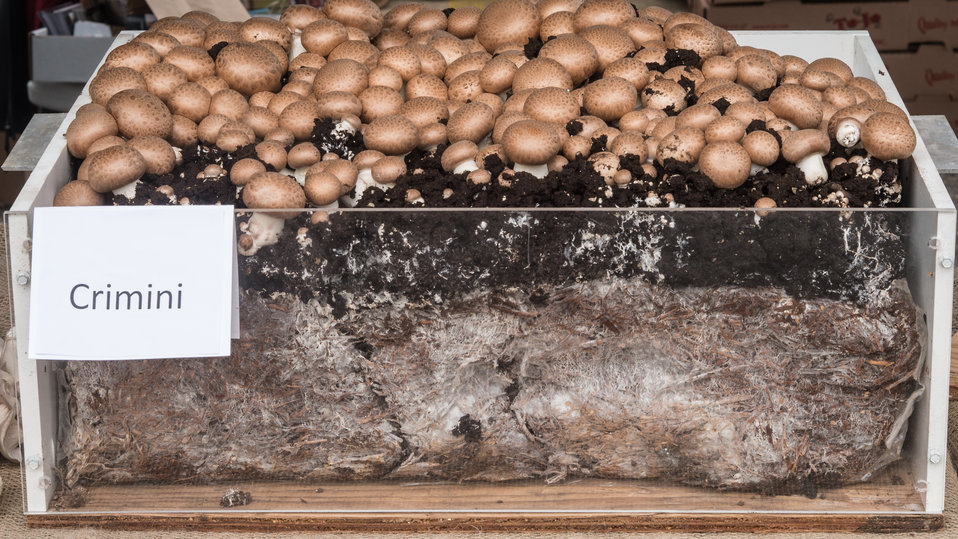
Crimini mushrooms in a growing medium on display at the U.S. Department of Agriculture (USDA) farmers markets and Harvest Festival at the USDA Whitten Building east parking lot in Washington, DC, on Friday, November 22, 2013.